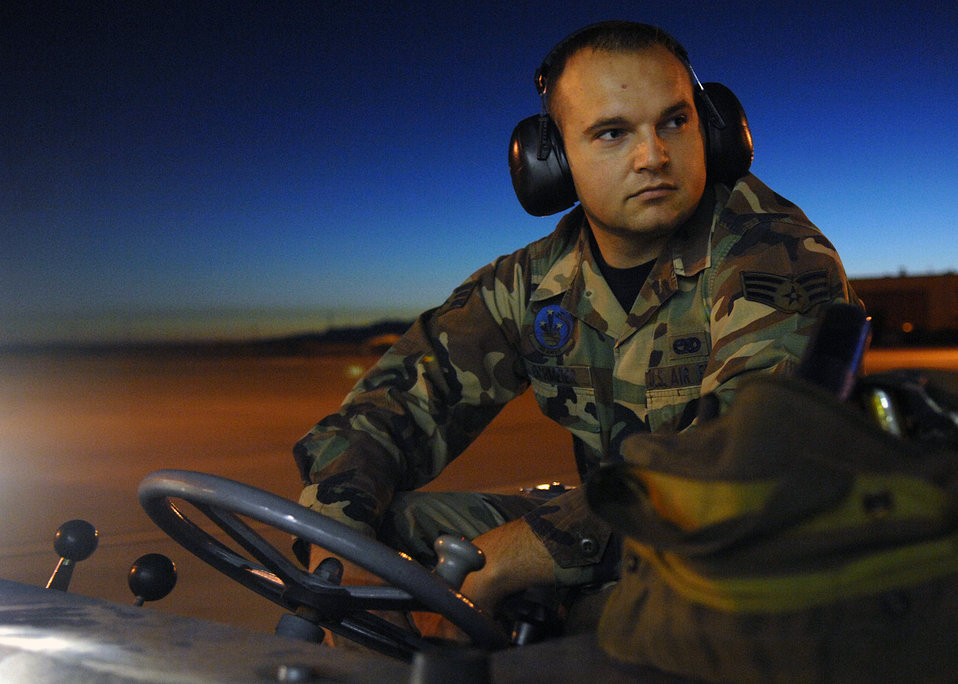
Ready or not...

Senior Airman Chad Eichmeier waits for the signal before loading a bomb onto an F-22 Raptor Jan. 15 at Holloman Air Force Base, N.M. Airmen and pilots are gearing up for an upcoming Red Flag exercise at Nellis AFB, Nev.